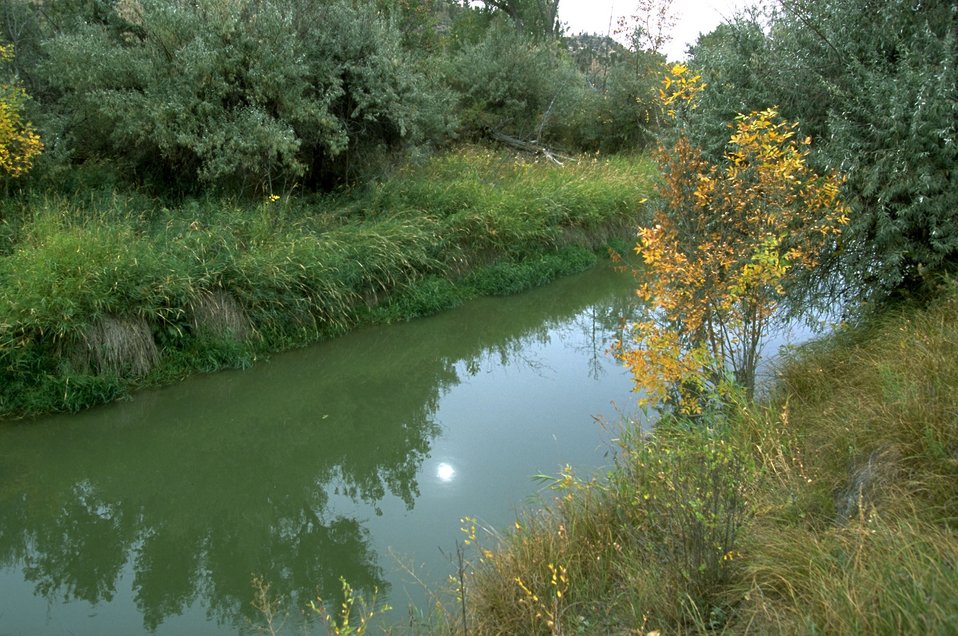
Reflection of trees and grass in the Yellowstone River channel